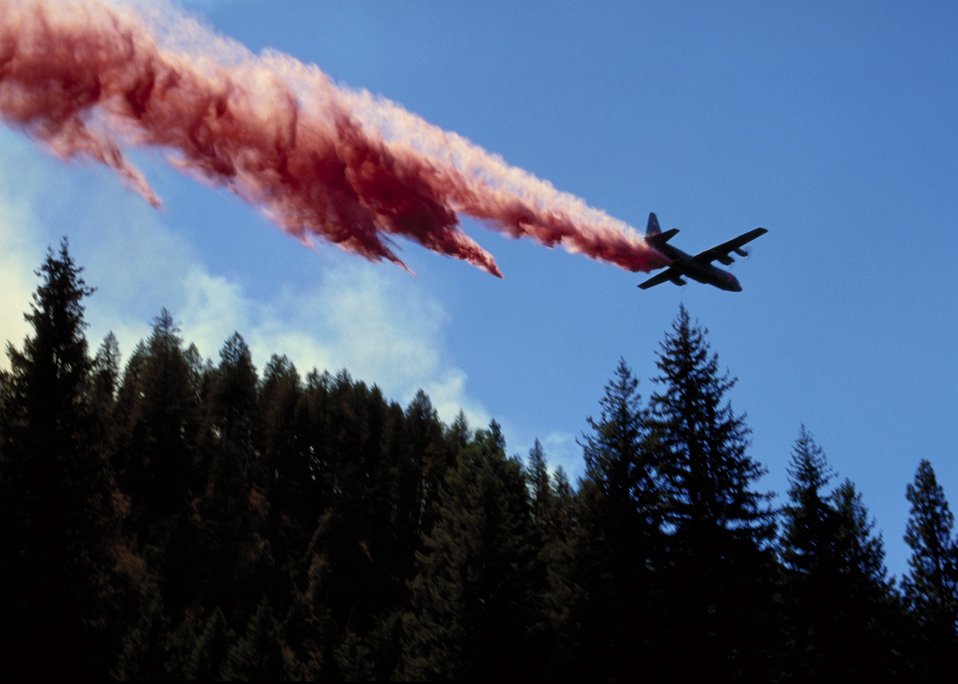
Retardant tanker Fire Season 2000 Lower Snake River District LSRD